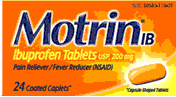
RECALLED - Motrin IB Coated Tablets and Motrin IB Coated Caplets

December 21, 2011 - McNeil Recall of Motrin IB Tablets and Caplets.